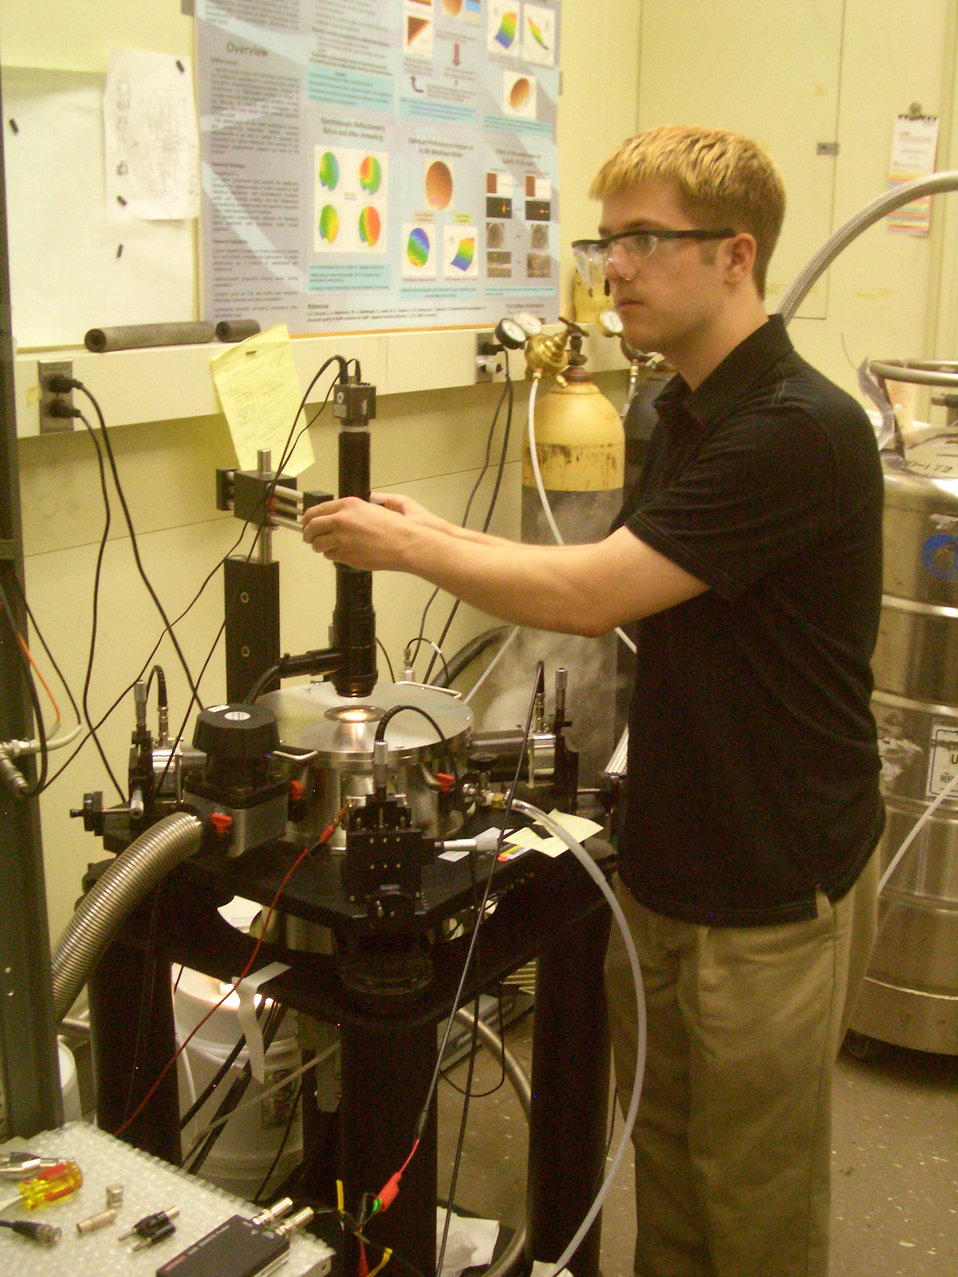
SURF Participant

During the summer of 2012, SURF participant and MIT student Sam Evans studied the magnetic susceptibility of certain nanoparticles at low temperature.